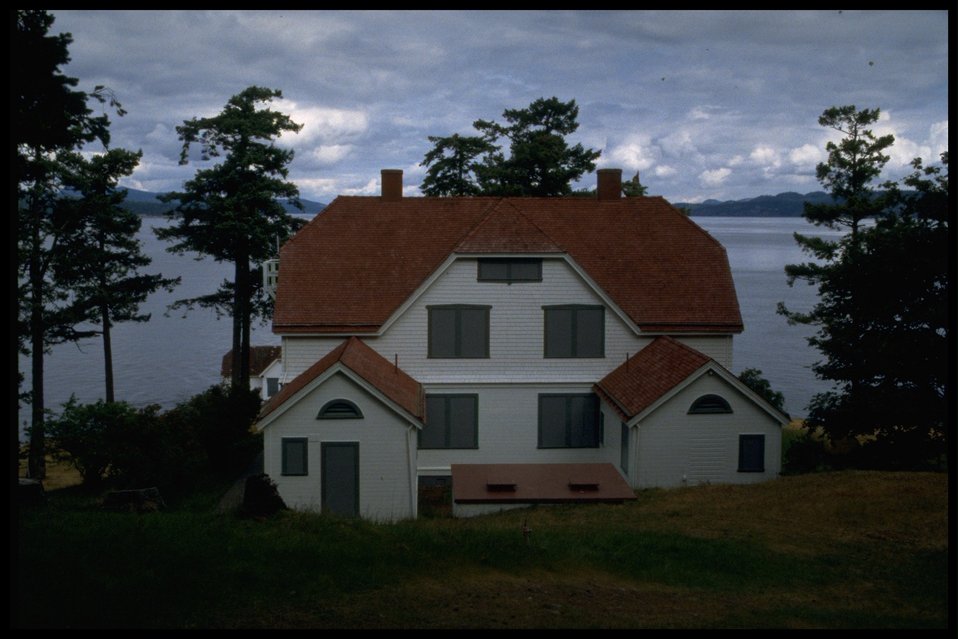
Living quarters at Turn Point. One in a series of ten shots of the living quarters.